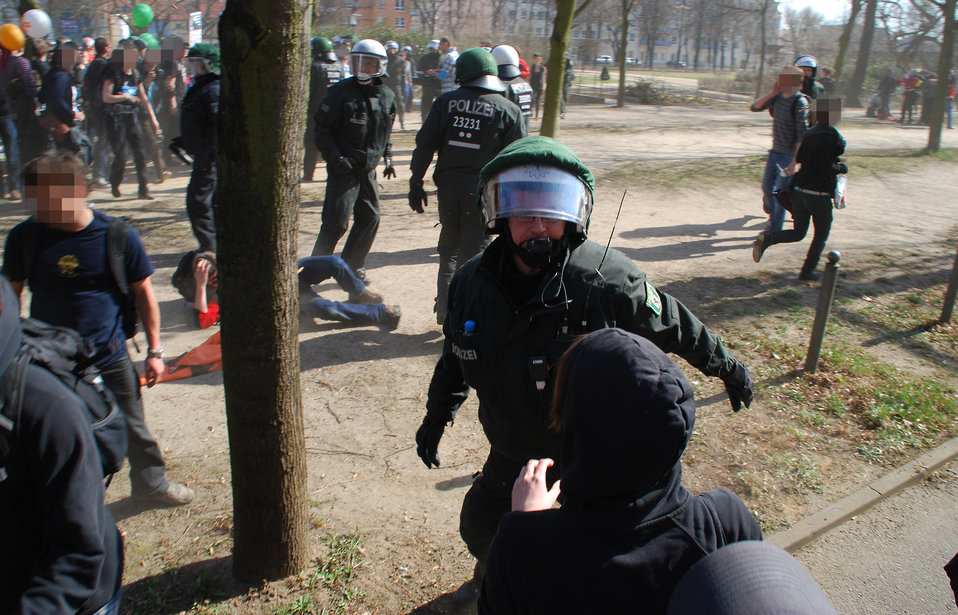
Proteste gegen den Nazi-Aufmarsch am 24.3.2012 in Frankfurt (Oder)